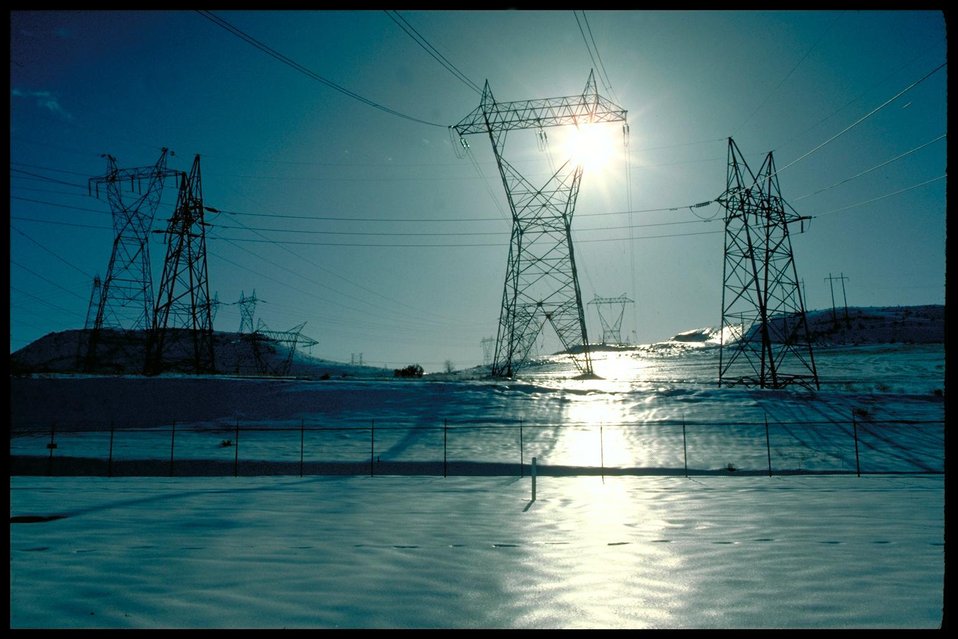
TRANSMISSION TOWERS AND LINES CROSS SNOW COVERED FIELD NEAR CELILO SUBSTATION IN DALLAS DAM, OREGON.

THE DALLES DAM, ON THE COLUMBIA RIVER, BORDERING OREGON AND WASHINGTON, IS ONE OF THE FEDERAL DAMS PROVIDING POWER TO THE PACIFIC NORTHWEST. THE BONNEVILLE POWER ADMINISTRATION IS A FEDERAL AGENCY THAT MARKETS AND DELIVERS MORE THAN HALF THE PACIFIC NORTHWEST'S ELECTRICITY AND MAINTAINS A NETWORK OF MORE THAN 12,300 MILES OF TRANSMISSION LINES.